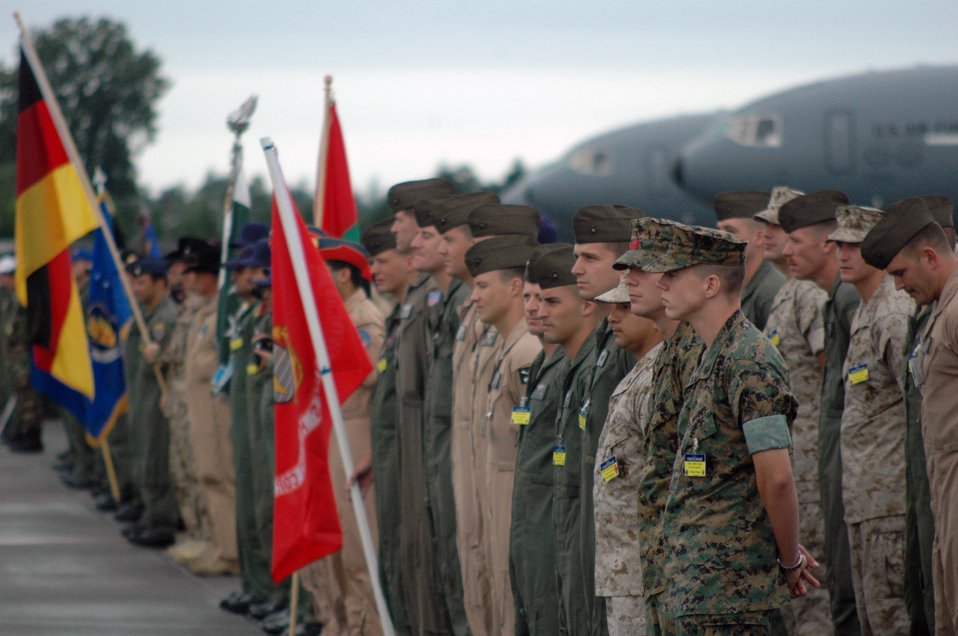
Opening ceremonies mark official start for Air Mobility Rodeo 2007

U.S. and international teams form up for the opening ceremonies of Air Mobility Rodeo 2007 at McChord Air Force Base, Wash., July 22. Rodeo, sponsored by Air Mobility Command, is a readiness competition for U.S. and international mobility air forces.